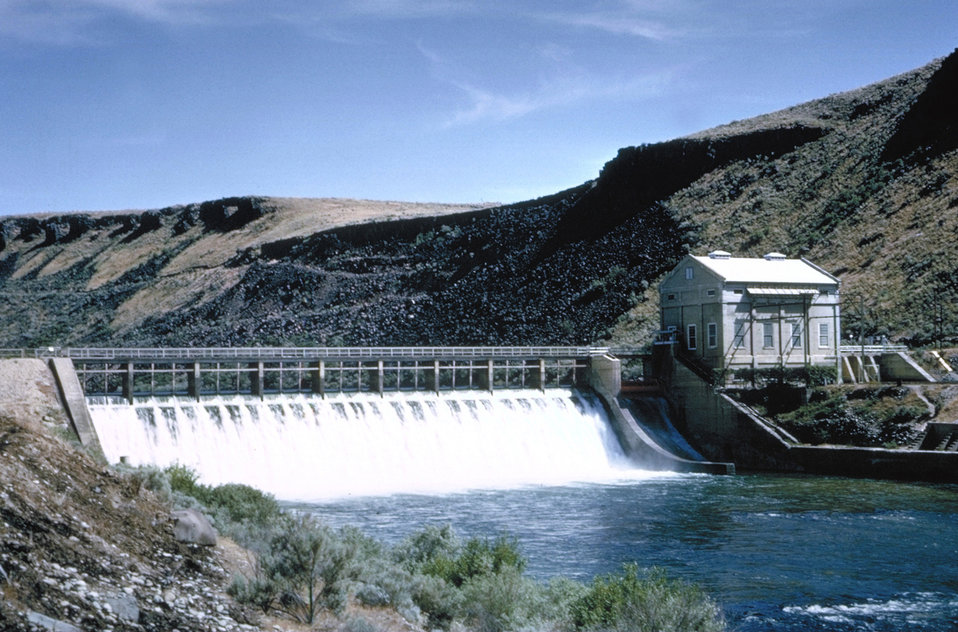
Boise River Diversion Dam in Boise River, Idaho.